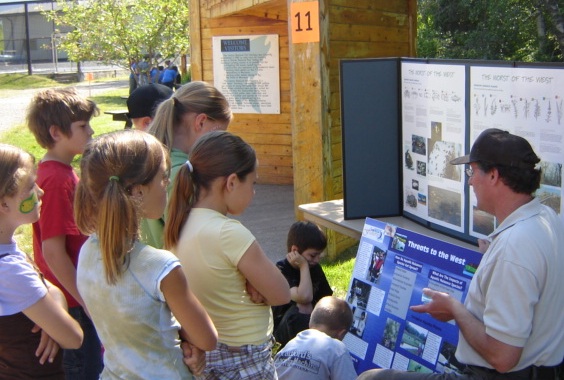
Creston National Fish Hatchery's Annual Fish Fun Fair for Third Graders

The Creston National Fish Hatchery, in association with the Flathead Community of Resource Educators (Flathead C.O.R.E.), holds an annual Fish Fun Fair to promote National Fishing and Boating Week.

Creston National Fish Hatchery invites 3rd graders from local schools to visit the hatchery and participate in learning stations, which may include fish anatomy, fish identification, fishing equipment and casting, hatchery tours, and other interesting exhibits with an aquatic focus.